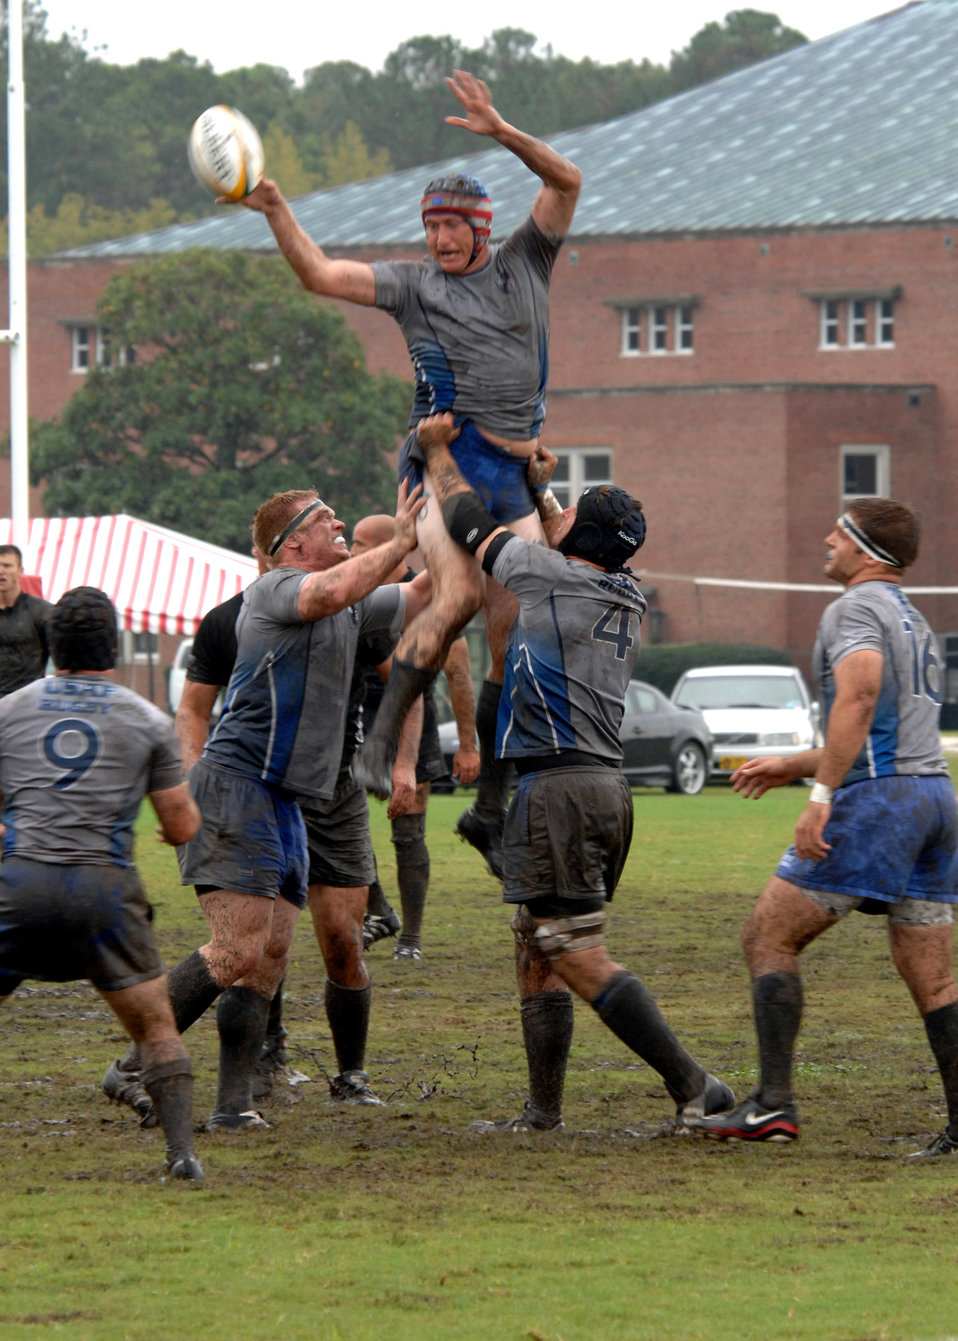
Air Force triumphs over Army

Air Force Rugby player James Reed Jr. attempts to tip the ball to a teammate during a line-out in the championship game of the 2007 Armed Force Rugby Tournament October 27 at Marine Corps Base Camp Lejeune, N.C. A line-out is used to determine possesion after a ball has gone out of bounds.